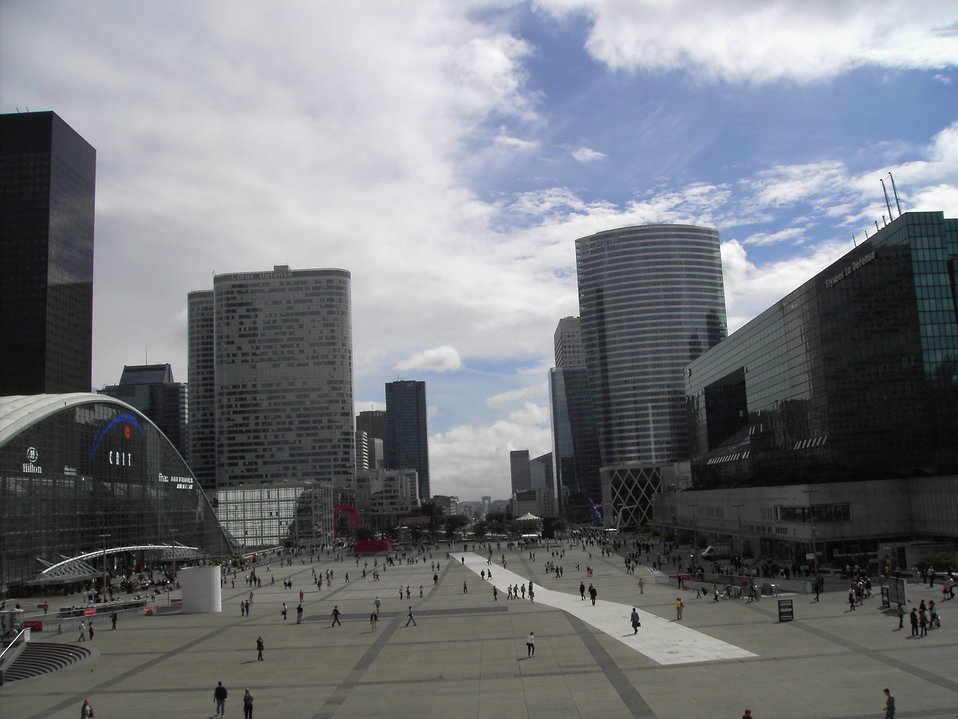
050906 Paris 127e1 Défense